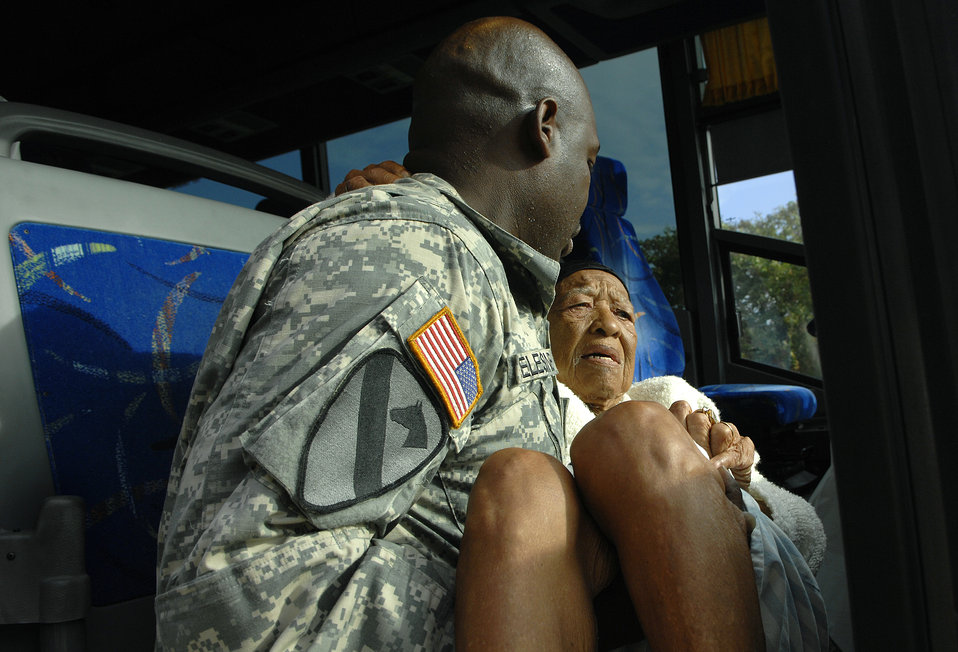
Carried to safety

Army Staff Sgt. Gateson Celestine carries Mrs. Annie Bowman, 85, of Lake Charles, La., into a bus reserved for special needs evacuees headed to Shreveport, La., in lieu of Hurricane Ike Sept. 12 at the Lake Charles Civic Center.